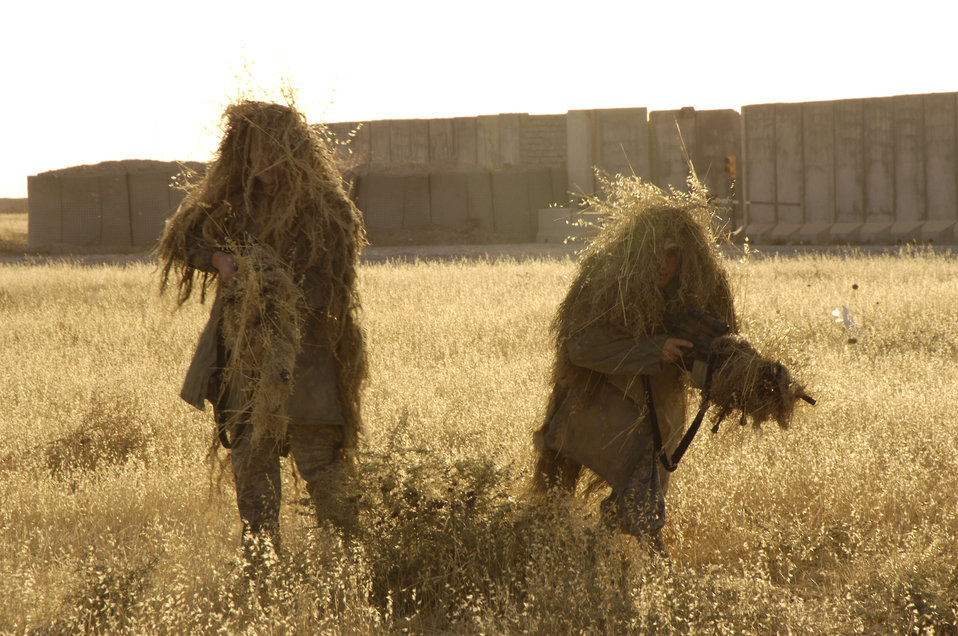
Sniper training

Airman 1st Class Matt Leeper and Staff Sgt. Curtis Huffman demonstrate how camouflaged gilly suits blend into their surroundings while setting up surveillance for terrorist activity Nov. 14 in Iraq. The 506th Expeditionary Security Forces Squadron at Kirkuk Air Base, Iraq, houses a close precision engagement team of Air Force snipers who train as anti-sniper teams to target terrorist and insurgent snipers attacking U.S. and coalition forces in the area. Airman Leeper and Sergeant Huffman are from the 354th Security Forces Squadron at Eielson Air Force Base, Alaska, deployed to Kirkuk Air Base, Iraq, as members of the 506th Expeditionary Security Forces Squadron.